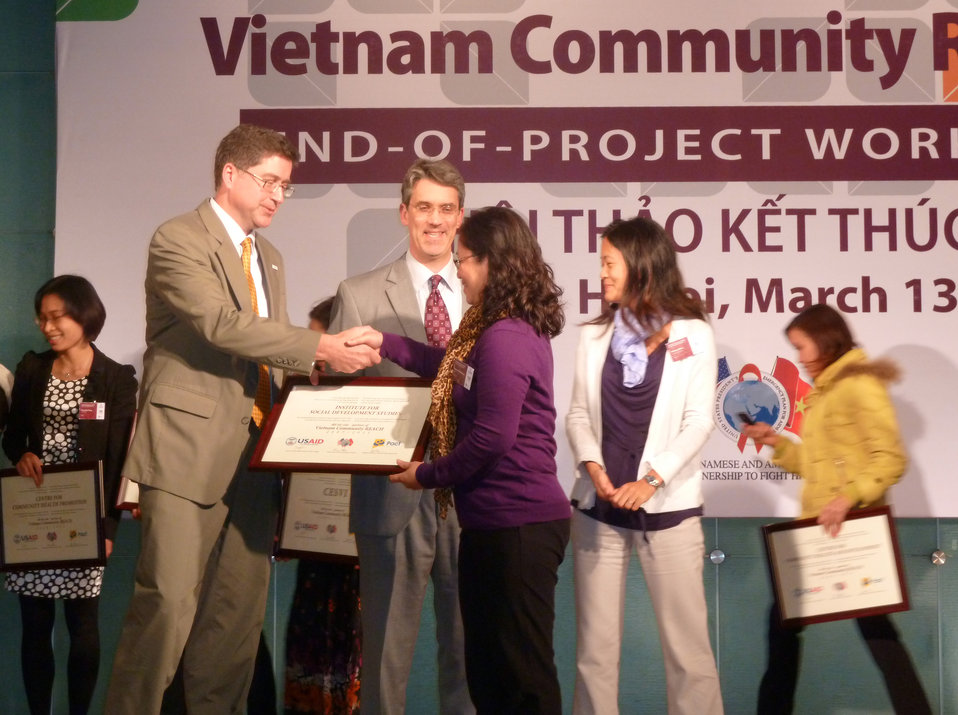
USAID, PEPFAR, and Pact award certificates to local and international partners for their work in addressing HIV in Vietnam

Community REACH project close-out with USAID and implementing partner, Pact